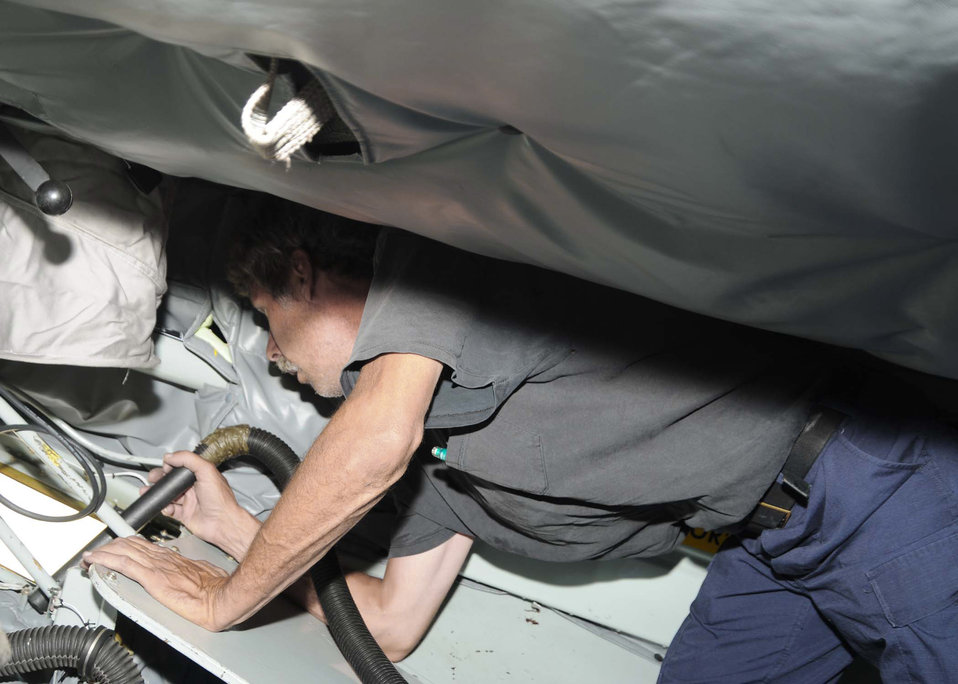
Altus team shoots for 'A' rating at AMC Rodeo

Jim Domian vacuums the boom pod of a KC-135 Stratotanker in preparation for the 2009 Air Mobility Command Rodeo at McChord Air Force Base, Wash., in July. During the rodeo competition, the team members of the 97th Maintenance Directorate get inspected on the conditions and maintenance of the aircraft.